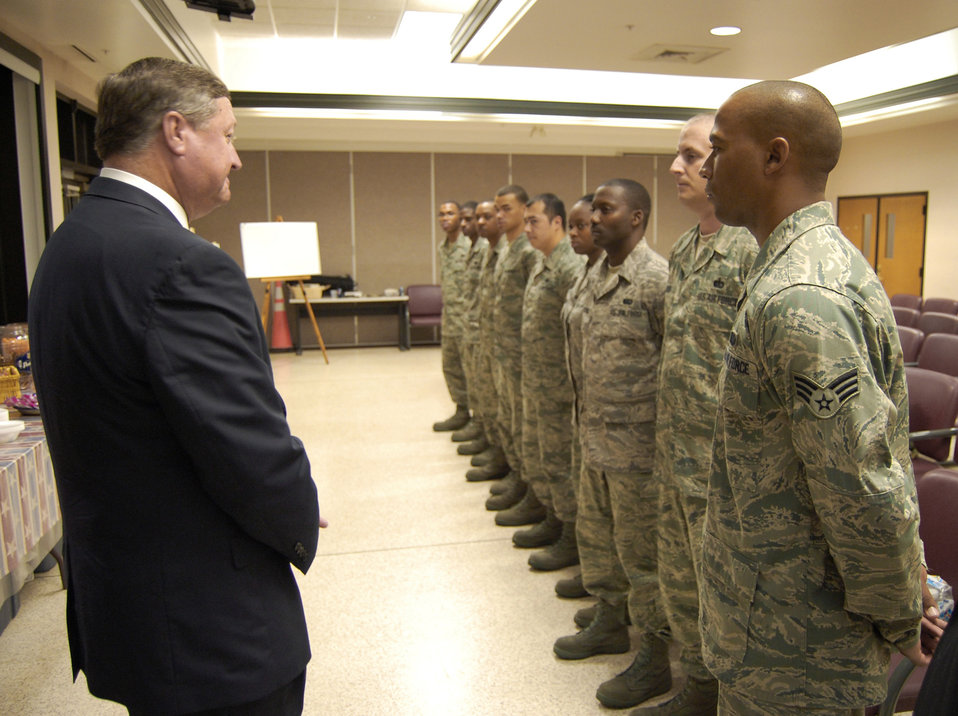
Air Force casualties from F-15E crash arrive at Dover

Secretary of the Air Force Michael B. Donley thanks Air Force Mortuary Affairs Operations Center detail team members after a dignified transfer for two Air Force captains killed in an F-15E Strike Eagle crash in Afghanistan in support of Operation Enduring Freedom July 19 at Dover Air Force Base, Del.